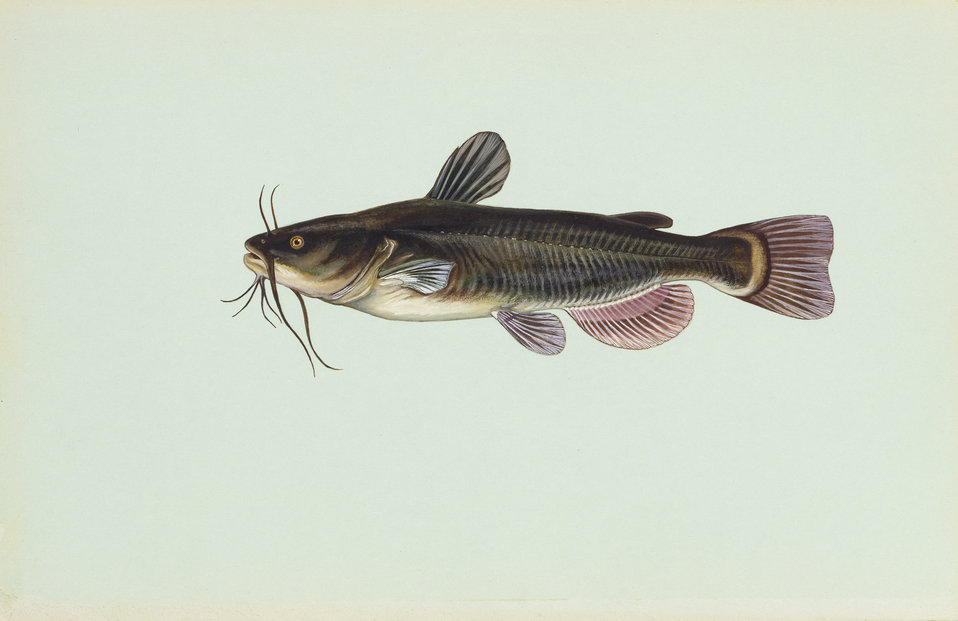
Black bullhead

Scans of artwork commissioned by the Fish and Wildlife Service in the 1970's. Original art is kept at DC Booth Fish Hatchery in Spearfish, SD.